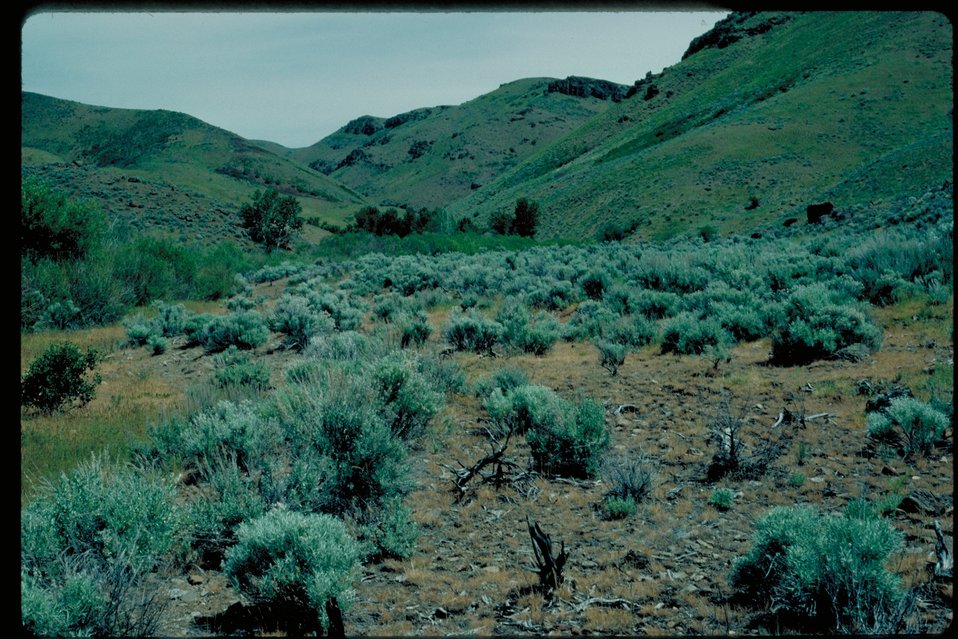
Goodales Cutoff Syrup Creek Station Site Oregon Trail Lower Snake River District